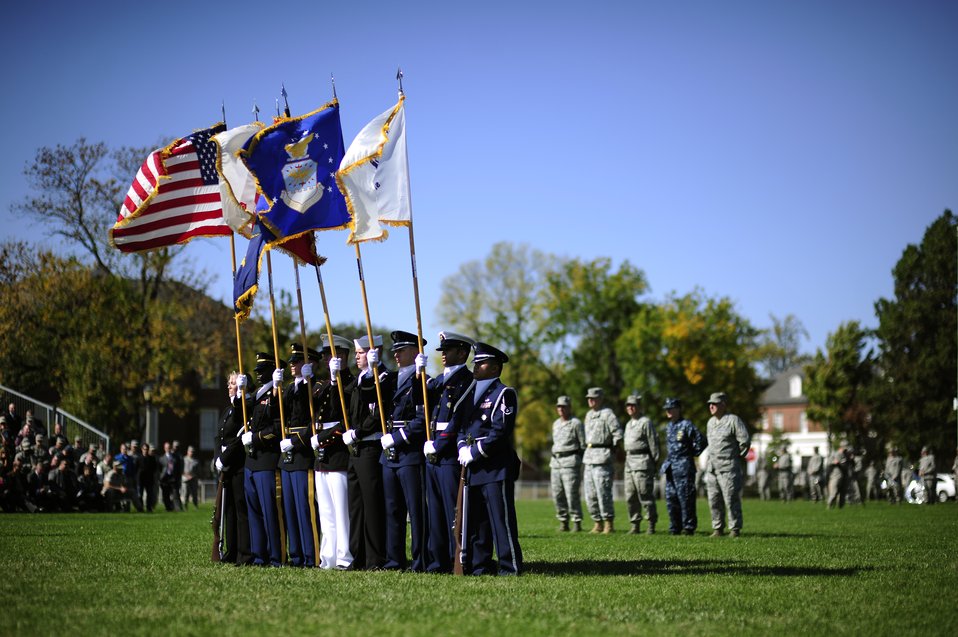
Color Guard

A color guard presents the colors during the U.S. Transportation Command change of command ceremony at Scott Air Force Base, Ill., Oct. 14, 2011. U.S. Air Force Gen. William M. Fraser III assumed leadership of the command from Gen. Duncan J. McNabb.